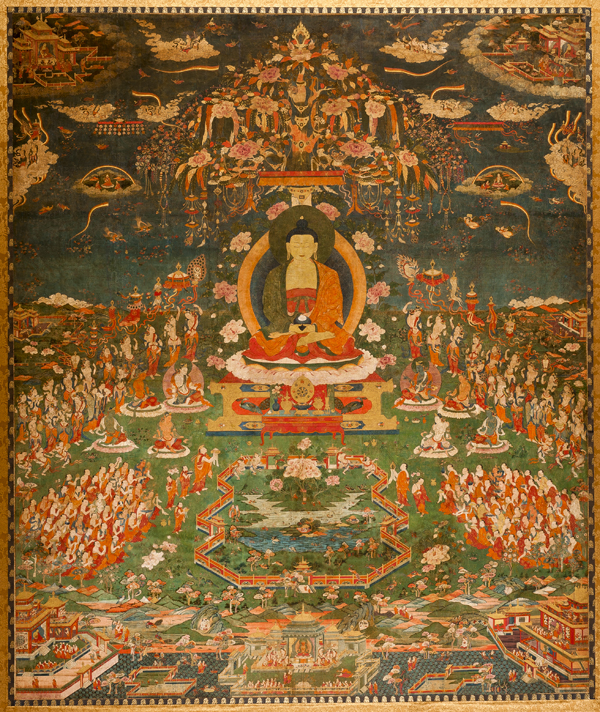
Amitabha in Sukhavati Paradise, Tibetan, circa 1700, Ink, pigments, and gold on cotton, San Antonio Museum of Art